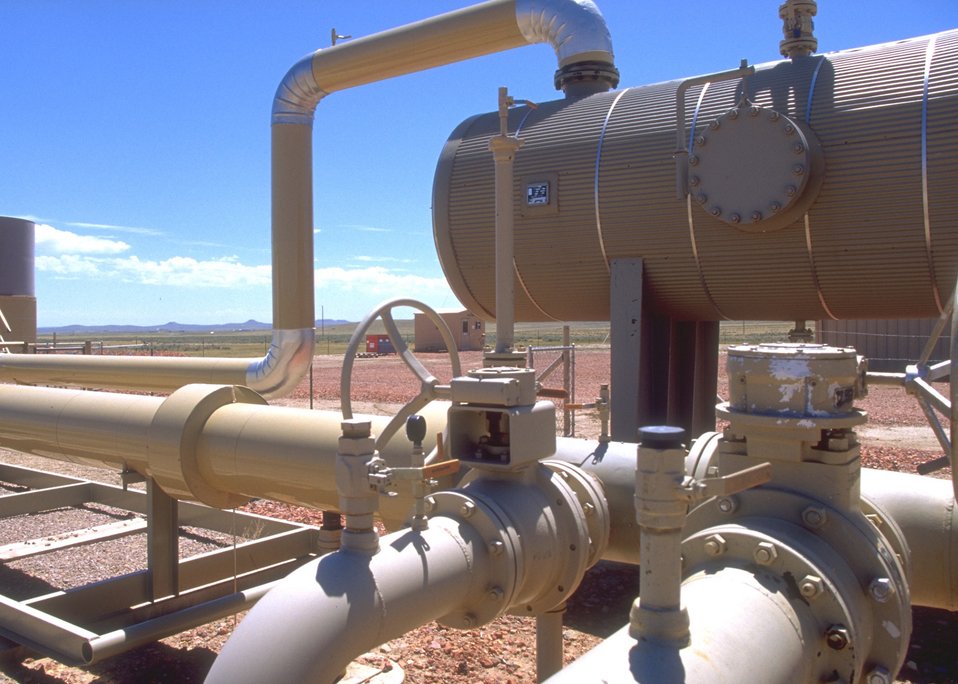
Facilities used in the production of coal bed methane, Buffalo Field Office.